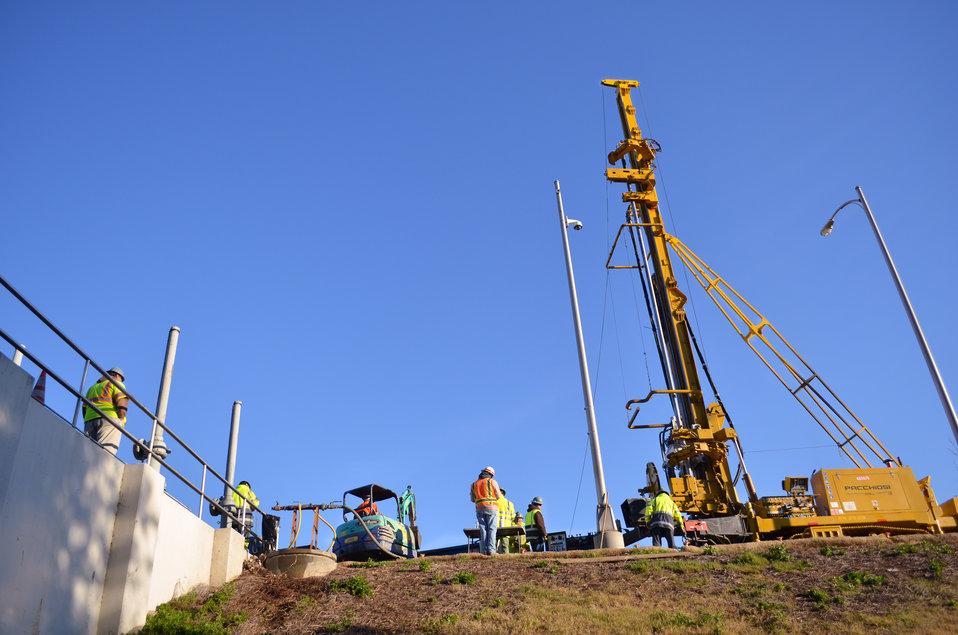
Jet grouting: a surgical approach to levee work

Crews operate a jet grout drill at a levee section along the American River in Sacramento, Calif., Dec. 11, 2013. This U.S. Army Corps of Engineers Sacramento District levee project at the E. A. Fairbairn Water Treatment Plant is using a precise construction method called jet grouting to inject a seepage cutoff wall around the plant’s buried utilities. The Corps installed more than 20 miles of seepage cutoff walls into American River levees between 2000 and 2002, but work was set aside for later where complicated encroachments existed such as utilities, power lines and bridges.